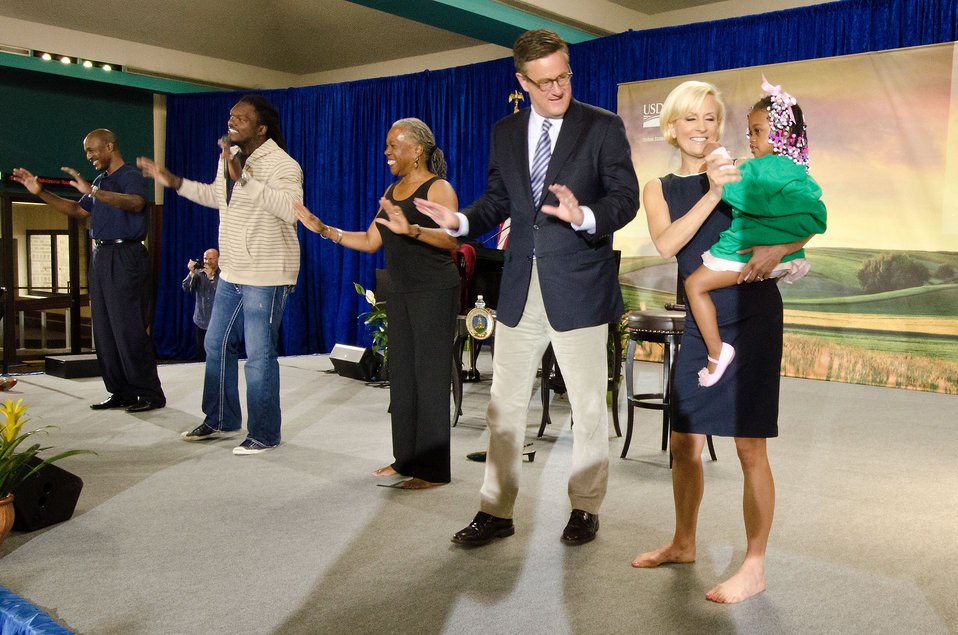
From left: Art Monk National Football League Hall of Famer, La Var Arrington, three time Pro-Bowler, Audrey Rowe, Administrator, Food Nutrition Service, Joe Scarborough and Mika Brzezinski hosts of MSNBC’s “Morning Joe” and Masters of Ceremony. Brzezinski holding Zadia Clanton a young 4-H student exercise to demonstrate the importance of the Fuel Up to Play 60 program at the United States Department of Agriculture's 150th Anniversary celebration in Washington, D.C., on Tuesday, May 15, 2012. Fuel Up to Play 60 is an in-school nutrition and physical activity program launched by the National Dairy Council and the National Football League, in collaboration with USDA, to combat childhood obesity.